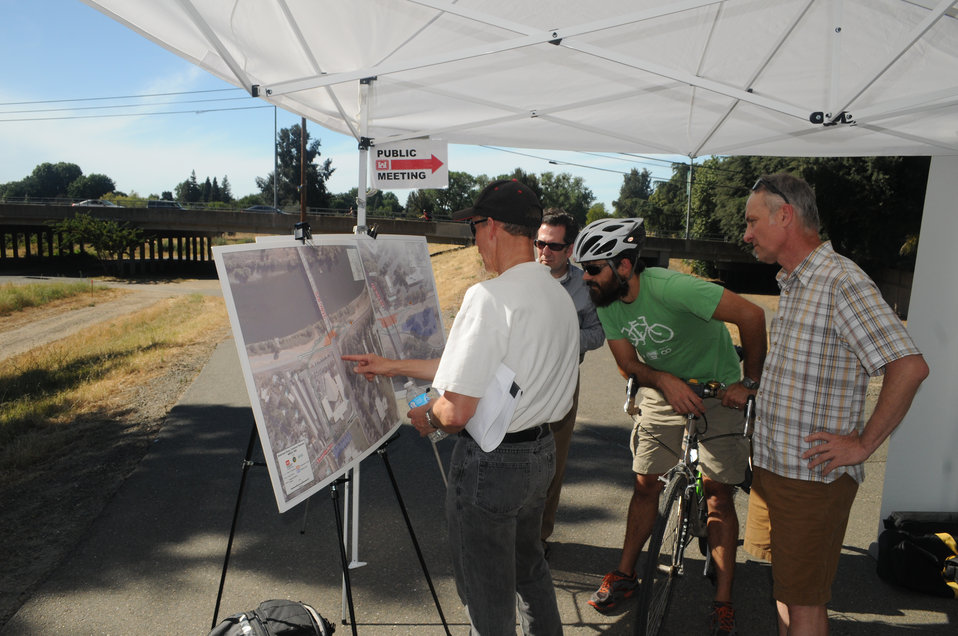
Levee work topic of public outreach

Mark Boedtker (left), an engineering technical lead for the U.S. Army Corps of Engineers Sacramento District, points out planned bicycle detours for Jim Brown (right), executive director for the Sacramento Area Bicycle Advocates, during a public workshop June 19, 2014 along the American River in Sacramento, Calif. Boedtker and representatives from the California Department of Water Resources and the Sacramento Area Flood Control Agency are actively reaching out to cyclists and other trail users to explain expected detours due to levee work scheduled to begin at the H Street Bridge in July.